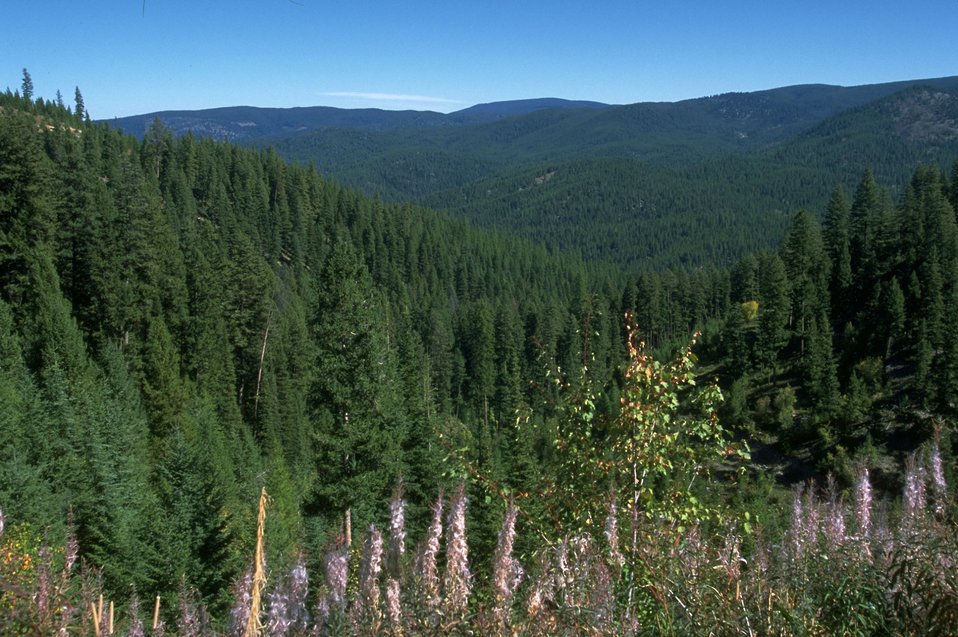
General forest scene